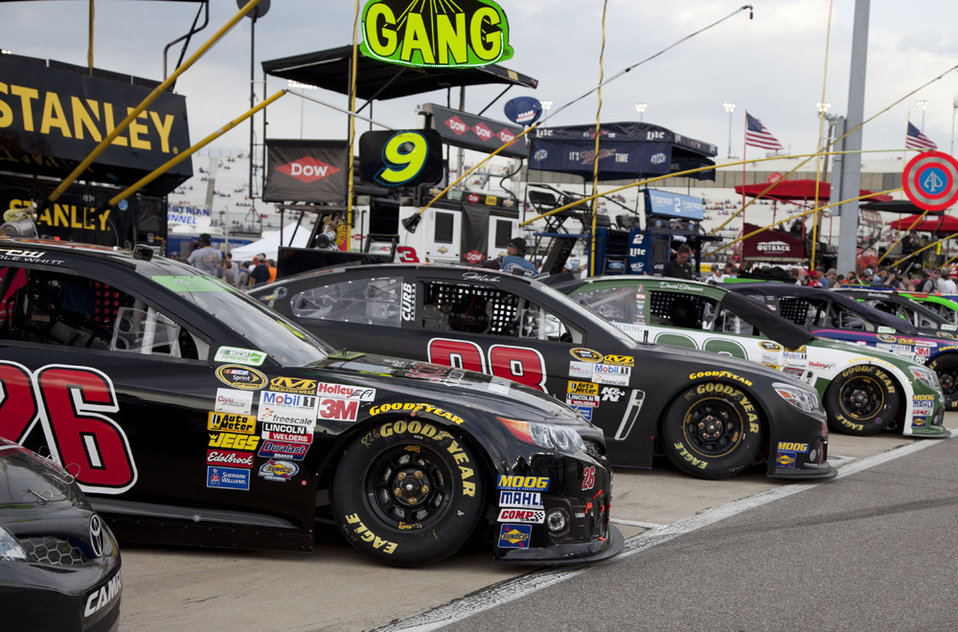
Tires are an important part of every NASCAR event with each driver using multiple sets of tires a race. To reduce their impact on the sport, Goodyear Tire -- the official tire supplier of NASCAR -- recycles 120,000 tires every year.